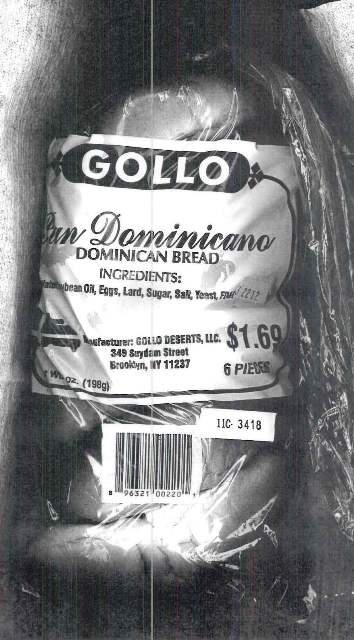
RECALLED – Dominican Bread

December 20, 2011 – Product Recall – Consumer Alert: Undeclared Milk In Gollo Brand “Pan Dominicano (Dominican Bread)”.